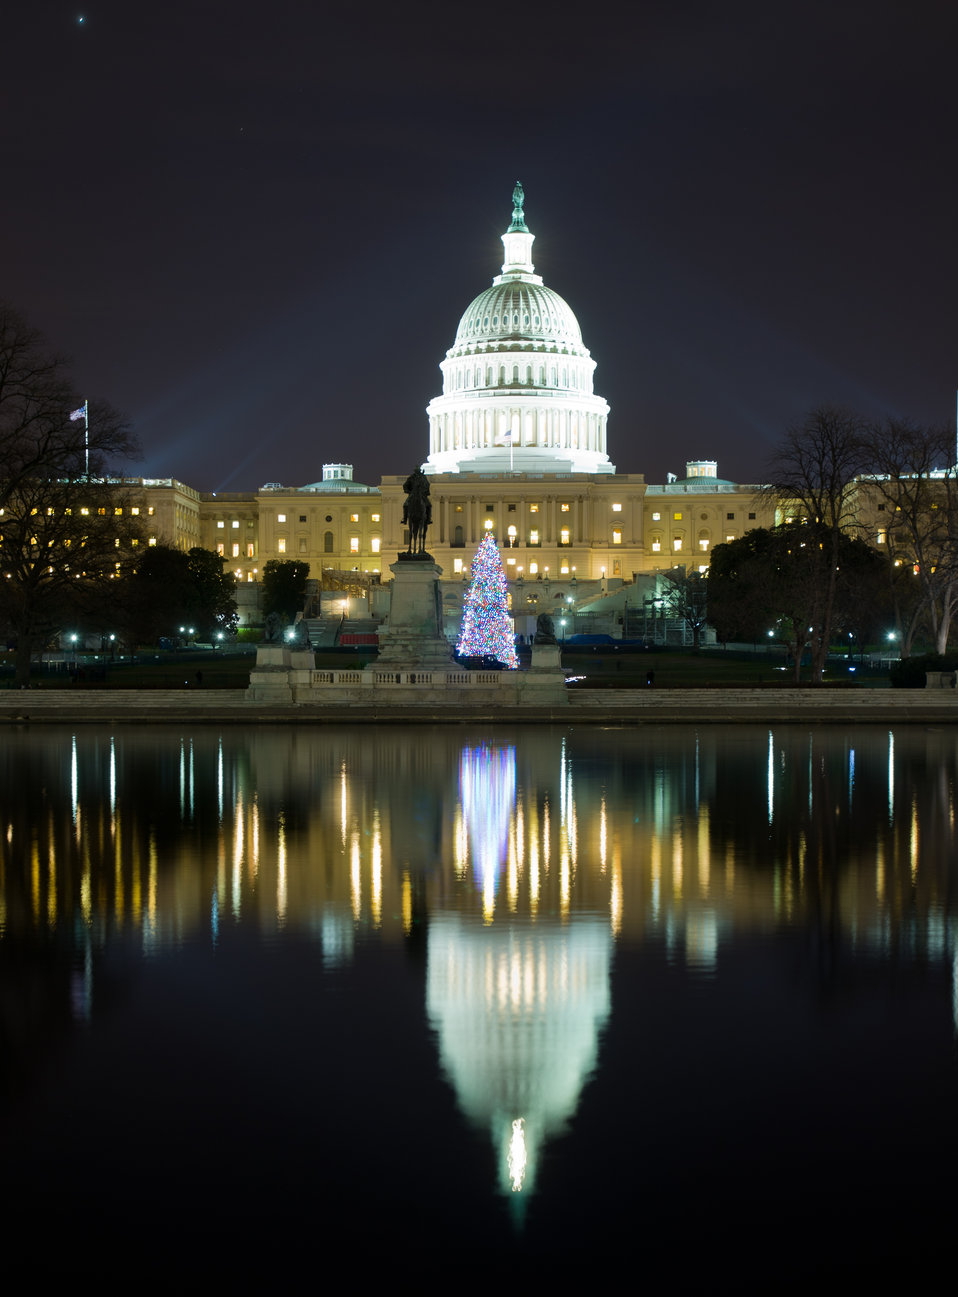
The lights of the 2012 U.S. Capitol Christmas Tree from the Blanco Ranger District of the White River National Forest near Meeker, Colorado; and decorated with hand-made ornaments, was switched on by Colorado Springs high school student Ryan Shuster and House Speaker John Boehner, on Tuesday, Dec. 4, 2012. Since November, the tree visited dozens of cities across the country as it made its way here on Nov.26, 2012. The 73-foot Englemann spruce traveled from the White River National Forest in Colorado. Other representatives as well as Natural Resources and Environment Under Secretary Harris Sherman spoke during the festivities.